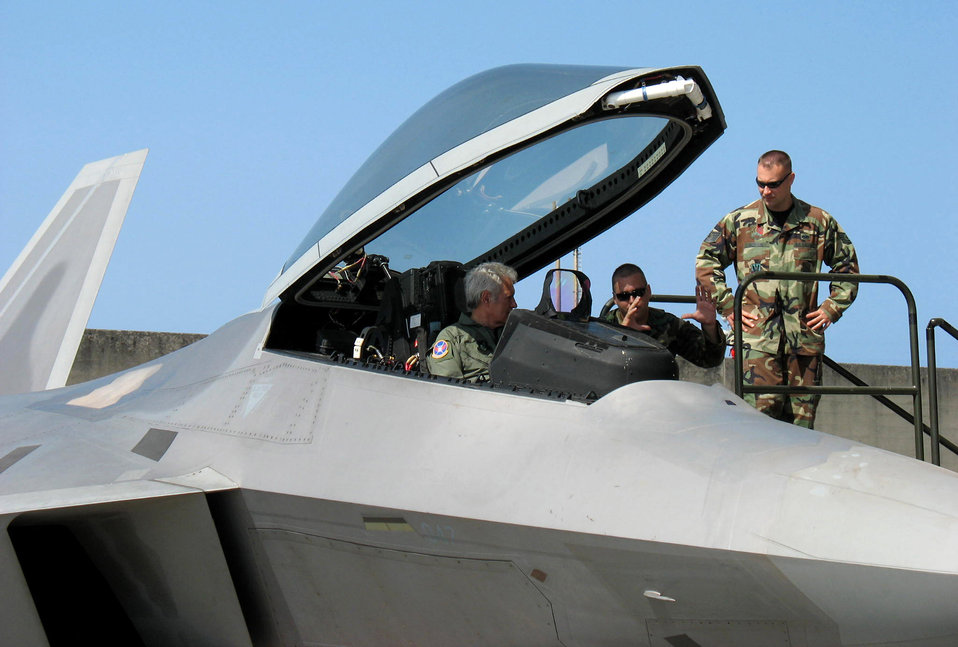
'Jeopardy' host visits Kadena Airmen

Alex Trebek sits in an F-22 Raptor as Staff Sgt. Michael Mauriello and Tech. Sgt. Chris McEwan explain the instruments in the cockpit during a